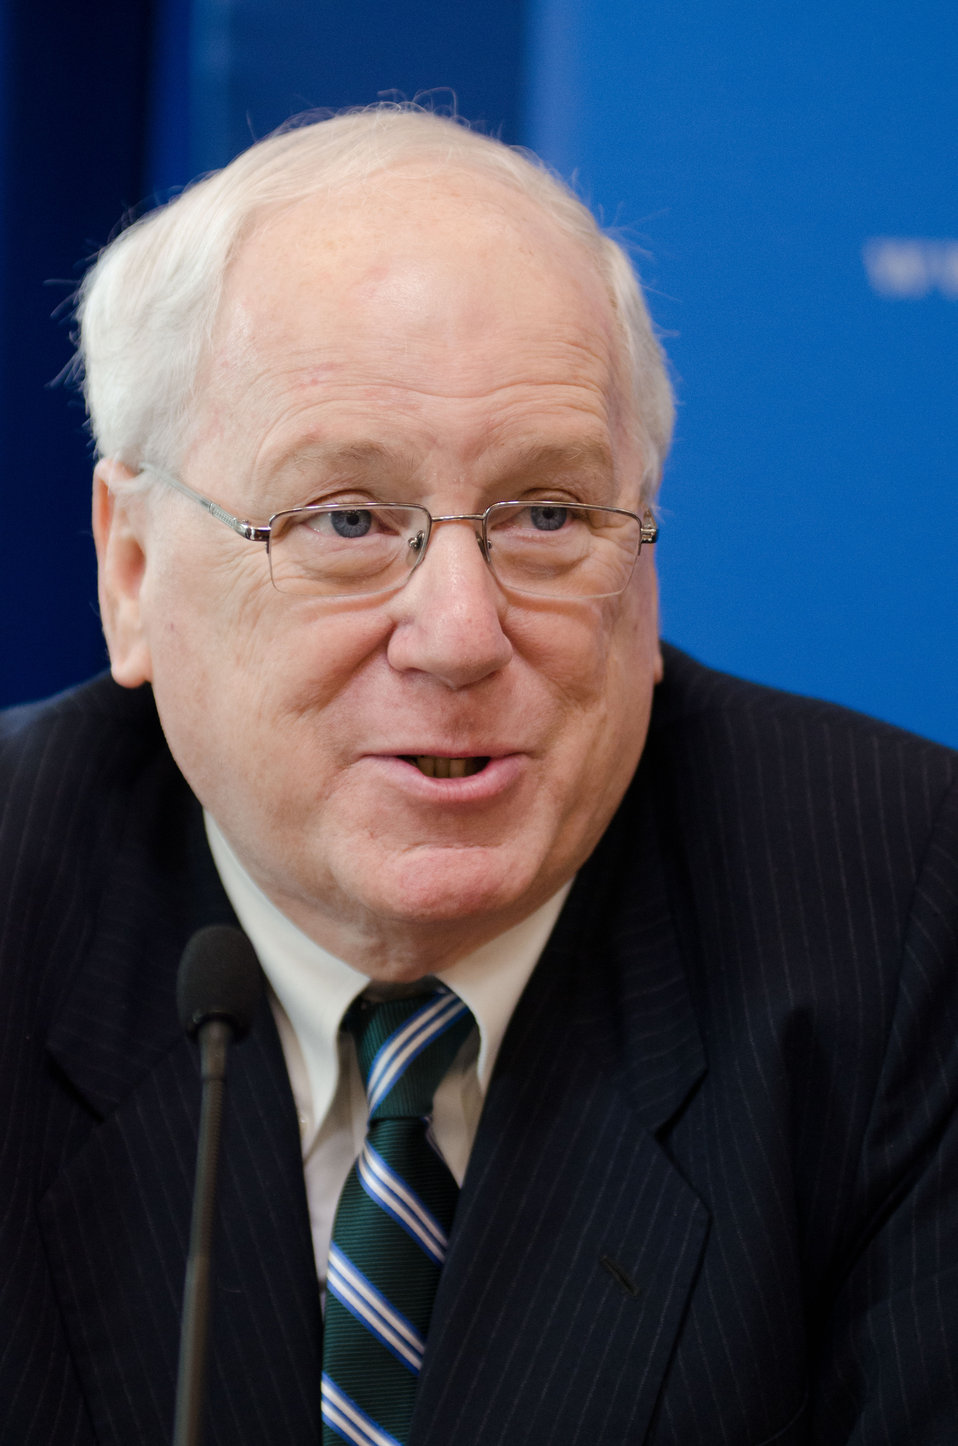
Former U.S. Ambassador to Cambodia and President of the World Food Prize Foundation Kenneth Quinn is one of eleven honorees recognized for his efforts to reduce hunger and increase food security in the U.S. and internationally at the White House Champions of Change Strengthening Food Security at Home and Abroad Event held at the White House on Thursday, September 6, 2012, in Washington, D.C.